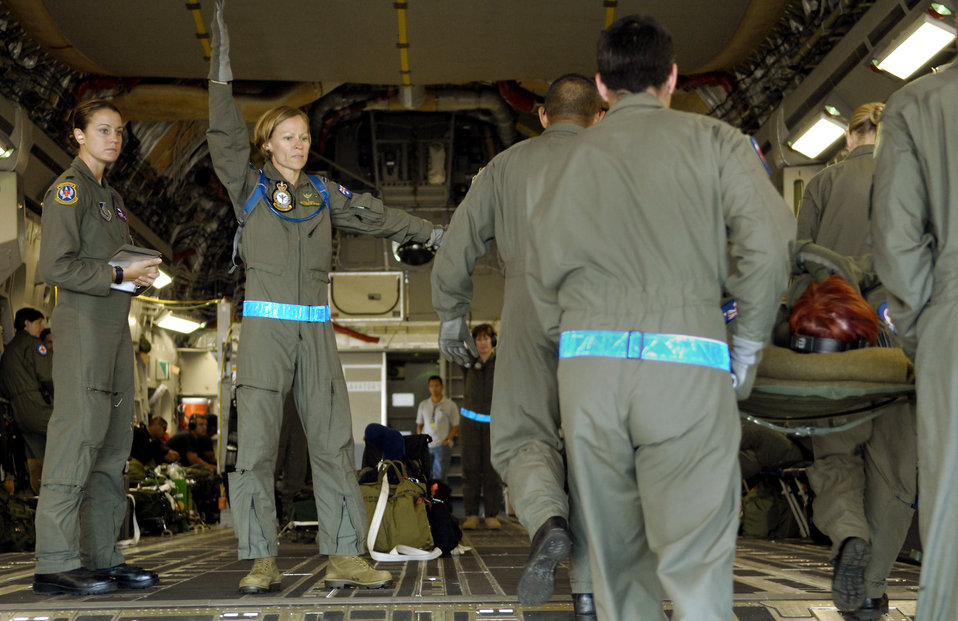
Australians train to save lives on C-17

Capt. Jennifer Haubert observes as Royal Australian Air Force Fight Lt. Robyn Tatnell directs her team to load patients on a C-17 Globemaster III Oct. 16 during aeromedical evacuation operations training at Hickam Air Force Base, Hawaii. Airmen from the 18th Aeromedical Squadron at Kadena Air Base, Japan, are at Hickam to train RAAF medical personnel who will be using specialized equipment and the C-17 for aeromedical evacuation. Captain Haubert is with the 18th AMS.